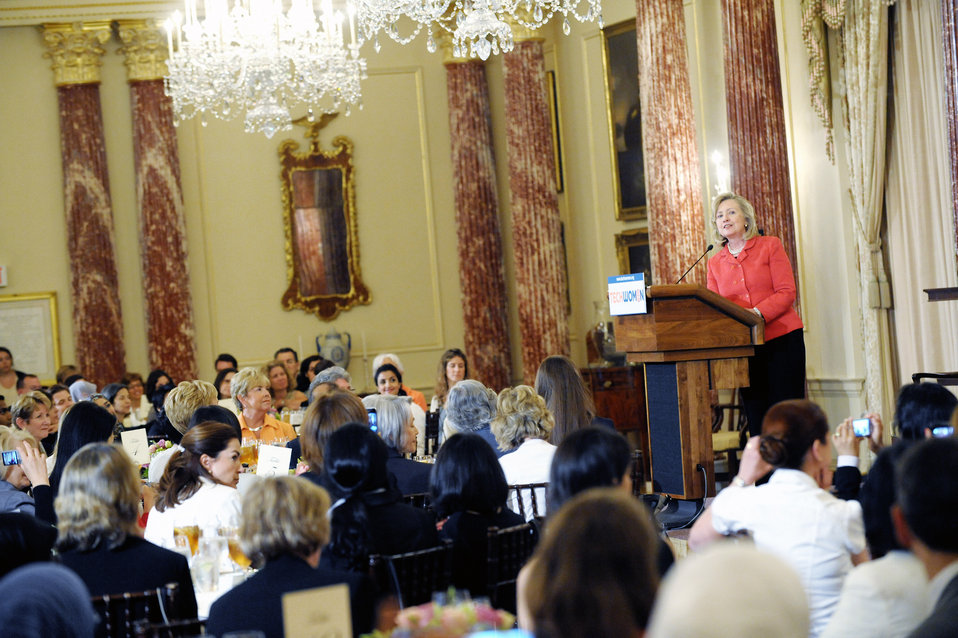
Secretary Clinton Delivers Remarks for the TechWomen Initiative

U.S. Secretary of State Hillary Rodham Clinton delivers remarks at a closing luncheon for the TechWomen Initiative, at the U.S. Department of State in Washington, D.C., on July 6, 2011.